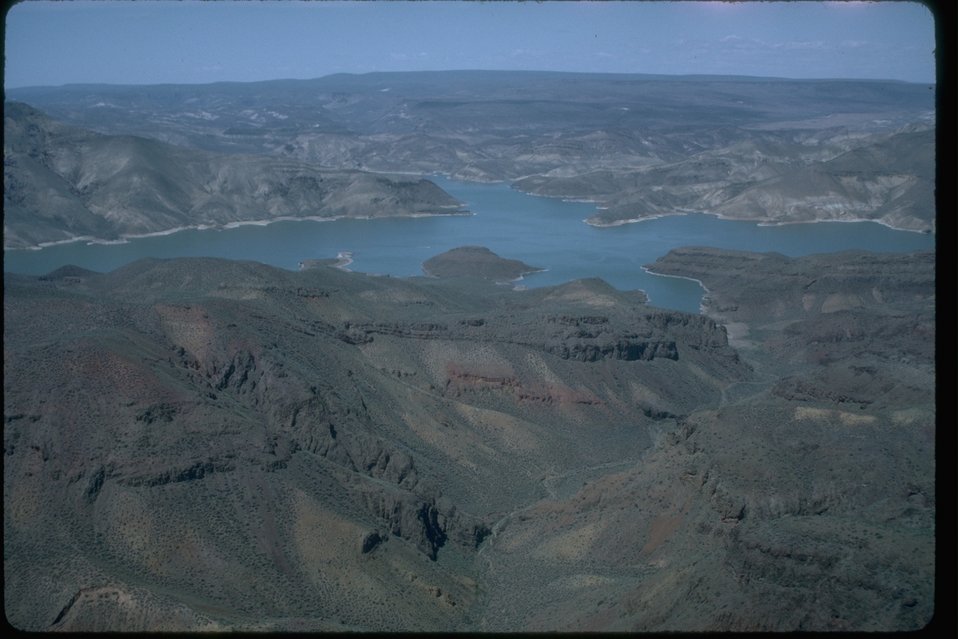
Aerial shot of Owyhee Reservoir in the background. OR 3-77A